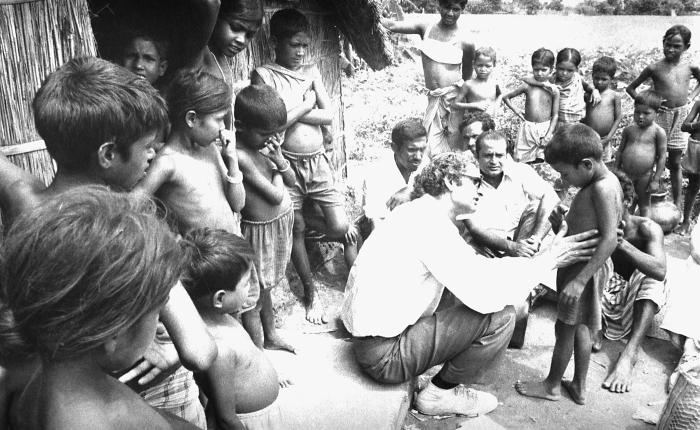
This image depicted World Health Organization (WHO) epidemiologist Dr. Hari Mehta (center, wearing glasses), examining village children for signs of smallpox, which leaves scars on its sufferers, the severity of which is directly proportional to the severity of the disease, and the patient's age. However, the younger the patient is, the more likely he'll be to loose such scars as he ages.In 1968, the WHO, and other world public health organizations - led by the United States and the then-Soviet Union - came together to join in the fight to eradicate smallpox from the world. The worldwide eradication of this dreaded virus was due to this Smallpox Eradication Campaign, whereupon, a mass-vaccination program was instituted across the globe that lead to the declaration in 1978 by a global commission that smallpox had been eradicated, which was officially accepted by the 33rd World Health Assembly in 1980. Smallpox is a serious, contagious, and sometimes fatal infectious disease.